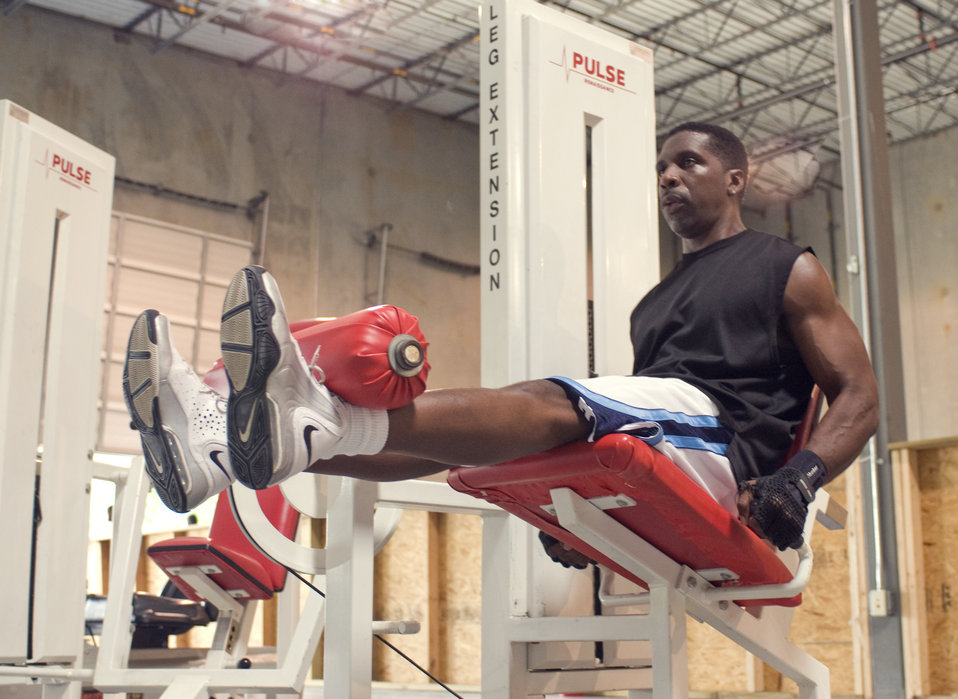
The man pictured here from a lower-left anterior-oblique view, was inside a gymnasium performing various strength-training exercises. At this point in his exercise routine, he was performing leg extensions on a Pulse� Leg Extension machine. His legs were fully extended, with his ankles cradling the cushioned, moveable and weighted segment of the machine. The legs are slowly brought up to the fully-extended position, and held there for a few seconds, then slowly allowed to return to the flexed position, with the lower legs draped over the edge of the seat when finished with each repetition of the exercise. Hopefully, he was also keeping well hydrated during his exercise regimen by drinking fresh water during his workout.